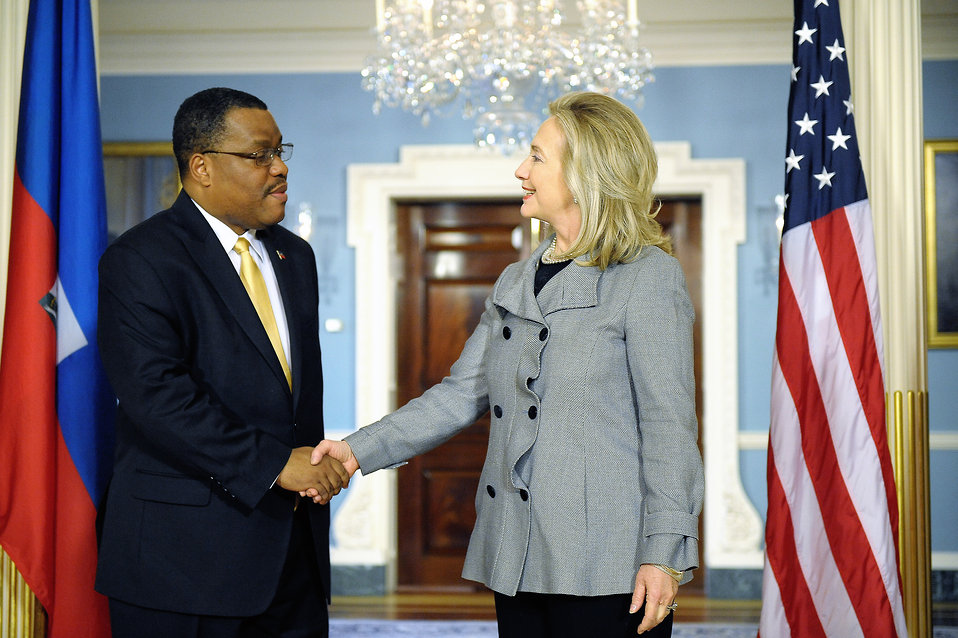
Secretary Clinton Meets With Haitian Prime Minister Conille

U.S. Secretary of State Hillary Rodham Clinton meets with Haitian Prime Minister Garry Conille at the U.S. Department of State in Washington, D.C., on February 8, 2012.